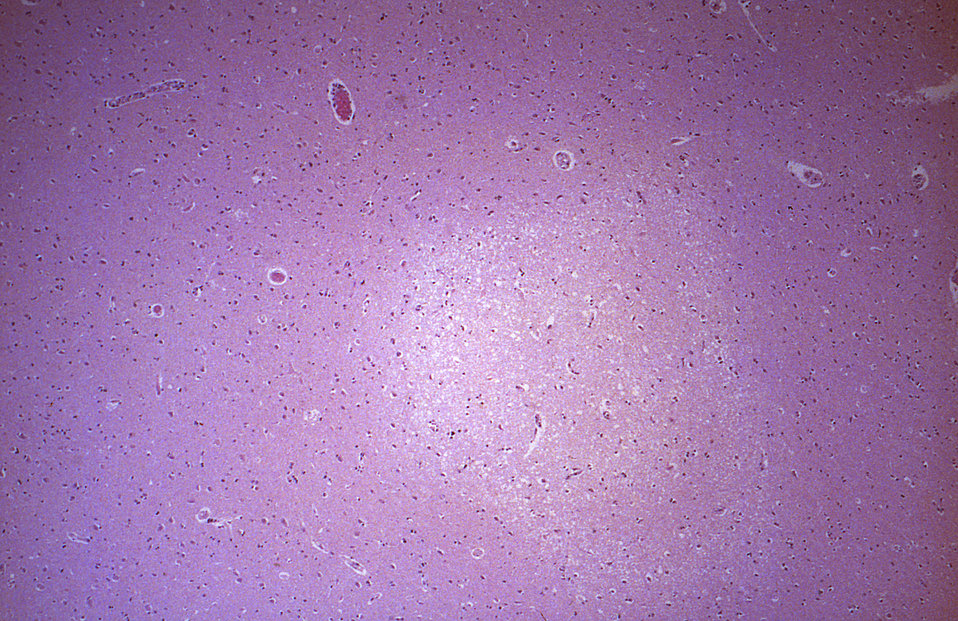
This photomicrograph revealed some of the cytoarchitectural histopathologic changes associated with a Nipah virus infection affecting the central nervous system of a human patient. In this particular case, a centrally-located target lesion can be identified.Infection with Nipah virus has been associated with an encephalitis (inflammation of the brain) characterized by fever and drowsiness and more serious central nervous system disease, such as coma, seizures, and inability to maintain breathing.